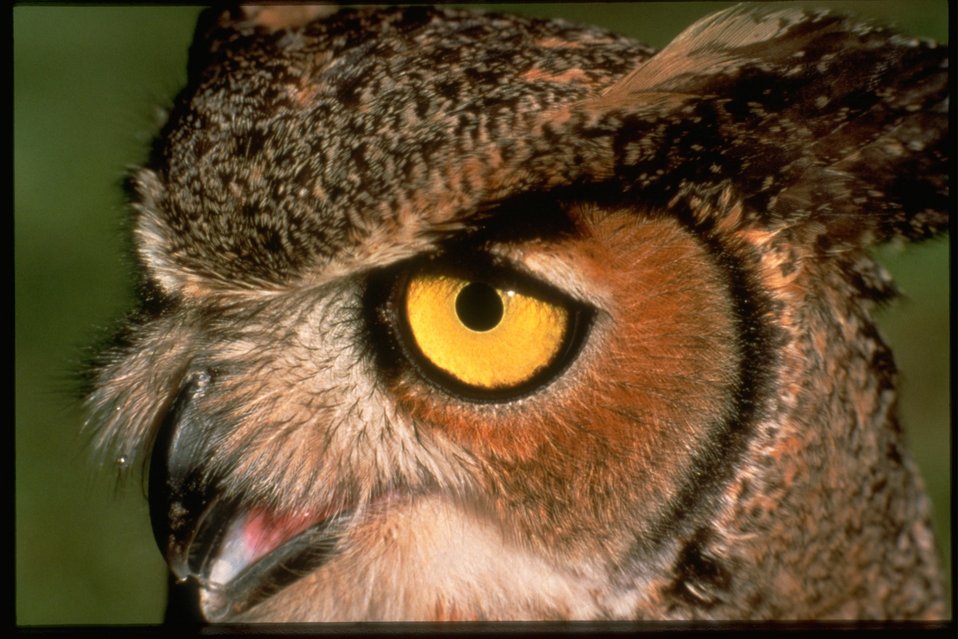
Close up photo of a Great horned owl's face.